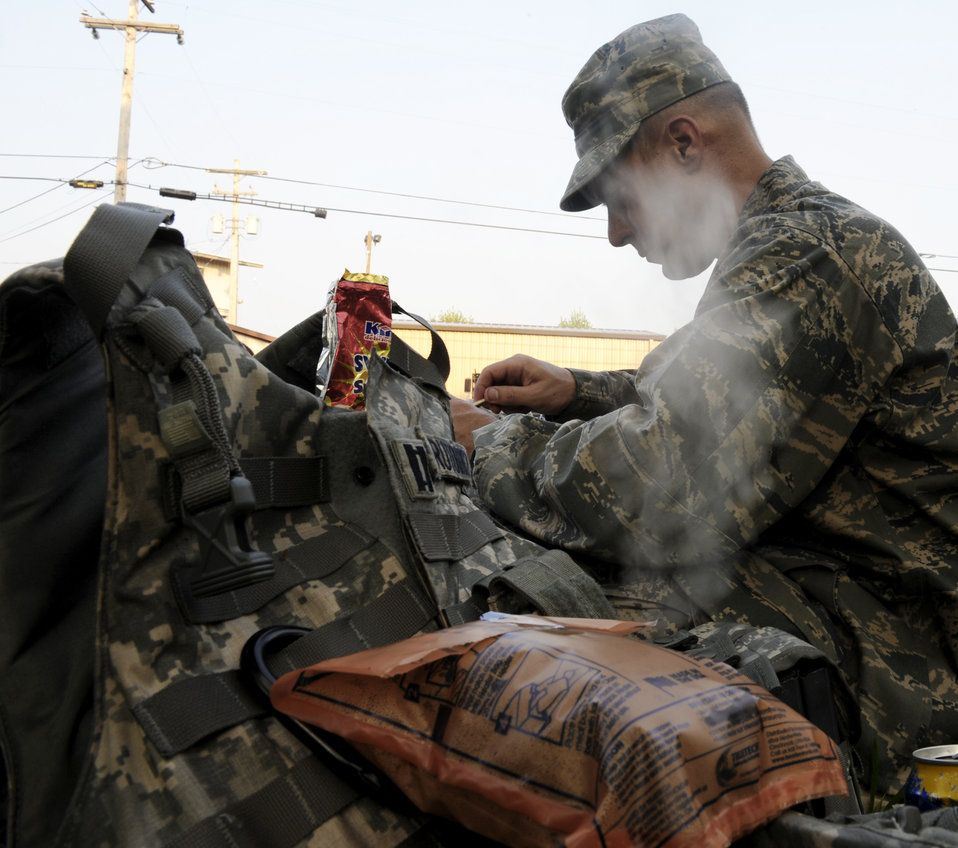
Airmen prepare for deployment

Capt. Rick Rutowicz takes a break for a meal ready to eat during 9mm familiarization training Aug. 10 at Fort Dix, N.J. He is a range control officer assigned to the 1st Range Operations Squadron at Cape Canaveral Air Force Station, Fla.